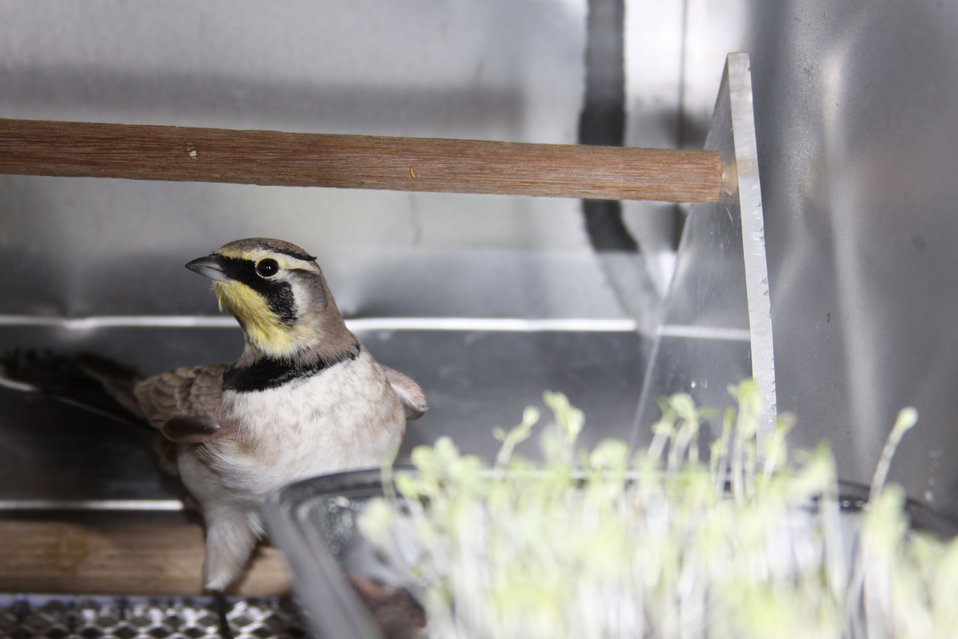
Horned lark Scott Werner

A captive horned lark is offered lettuce seedlings treated with a bird repellent.